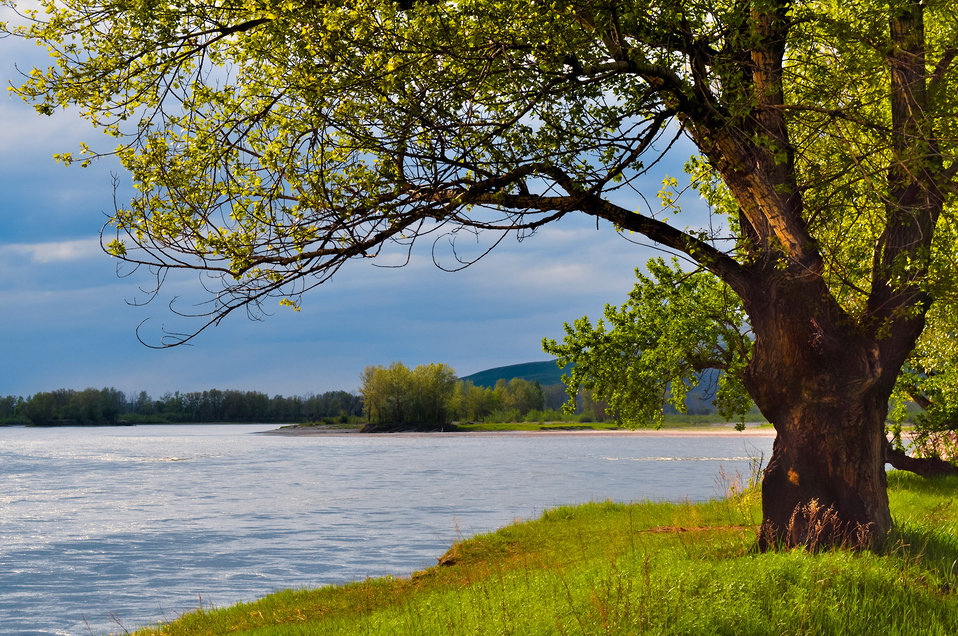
The tree on the bank.